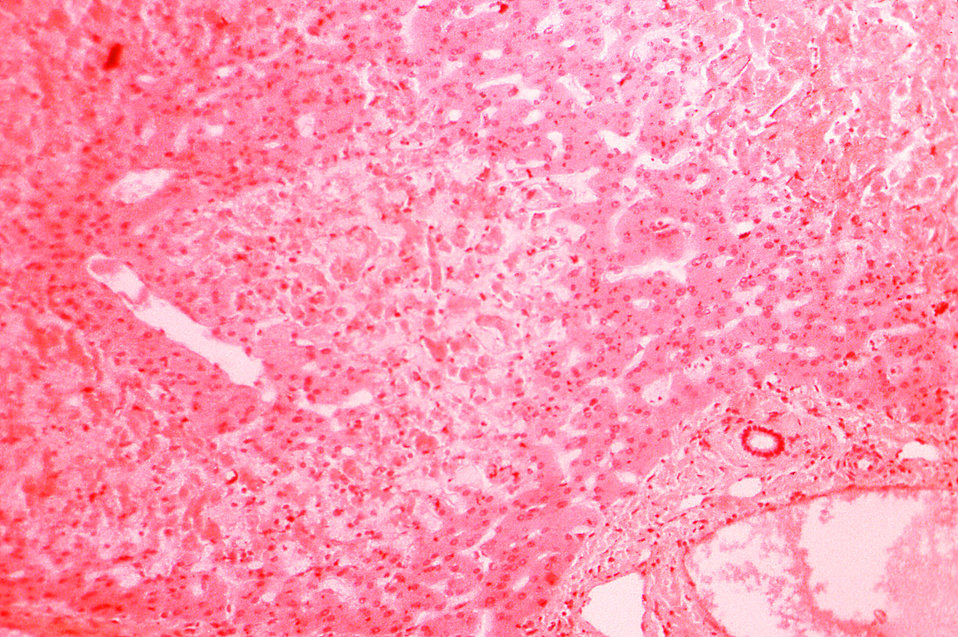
Under a magnification of 80X, this hematoxylin-eosin-stained (H&E) photomicrograph depicts the cytoarchitectural changes found in a liver tissue specimen extracted from an 'atypical' viral hepatitis patient. In this particular view, note that there is a region of acidophilic necrosis in the midst of intact liver parenchyma. When viral hepatitis is categorized as being of the atypical type, it usually means that there is an accompanying infection such as yellow fever, or malaria. Though in this particular case, any concomitant infection was unidentified.